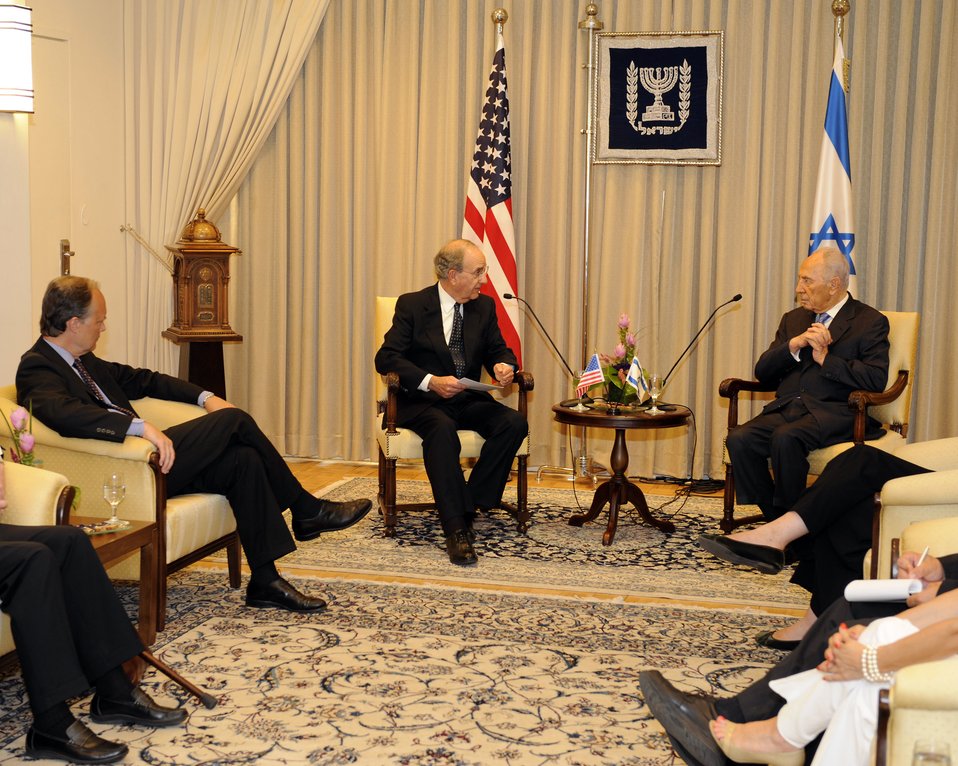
U.S. Special Envoy George Mitchell Meets With Israeli Defense Minister

U.S. Special Envoy George Mitchell with Israeli Minister of Defense Ehud Barak during their meeting in Tel Aviv, Israel July 26, 2009.